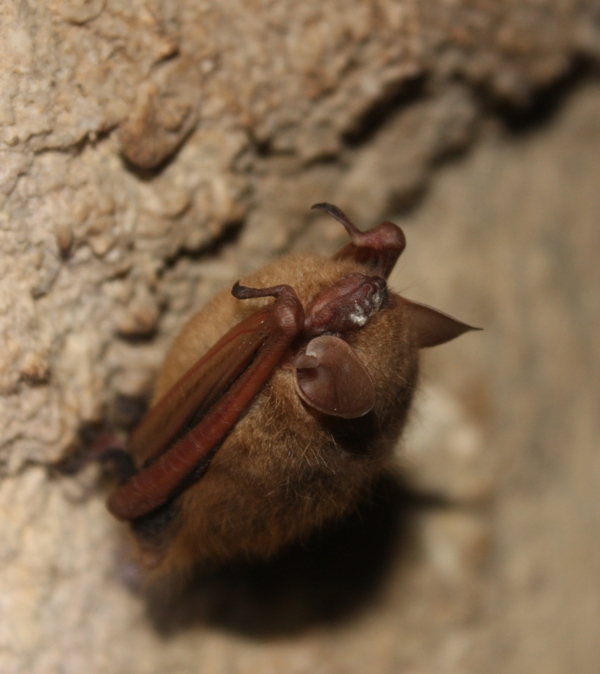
tri-colored bat with WNS